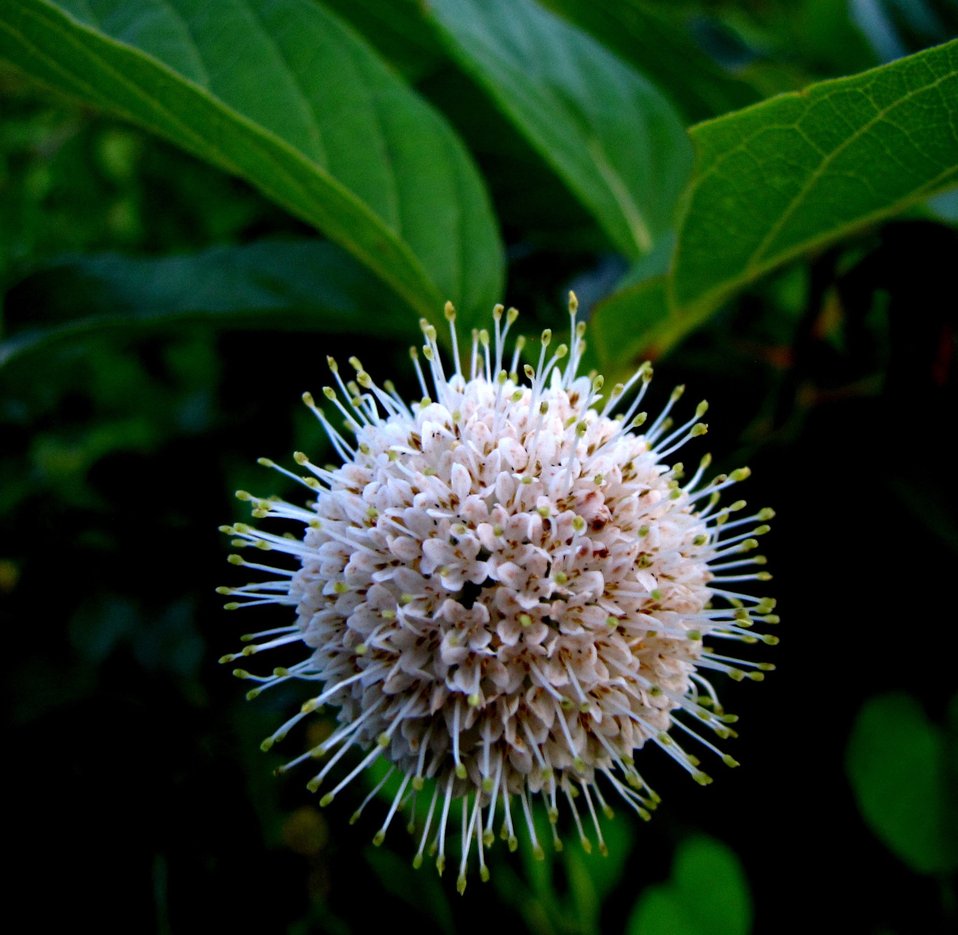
buttonbush

Port Louisa National Wildlife Refuge, IA